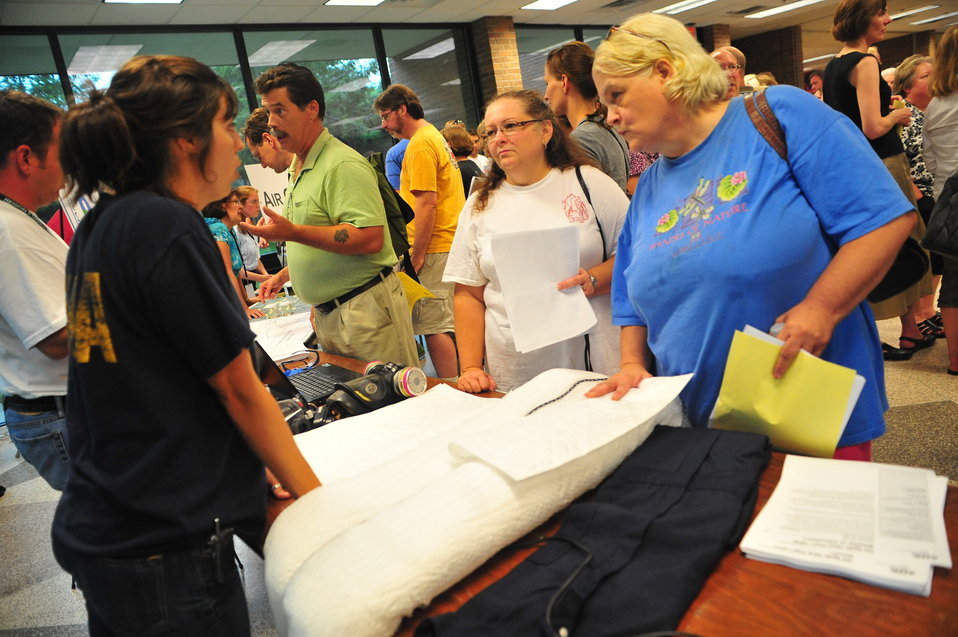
EPA's response to the Enbridge oil spill

August 3, 2010 -- At an open house in the Marshall, Mich., high school, EPA on-scene coordinator Theresa Holz shows community members some of the different types of equipment used for responding to oil spills. The open house gave members of the community a chance to talk one-on-one with staff from EPA and other government agencies responding to the Enbridge oil spill.